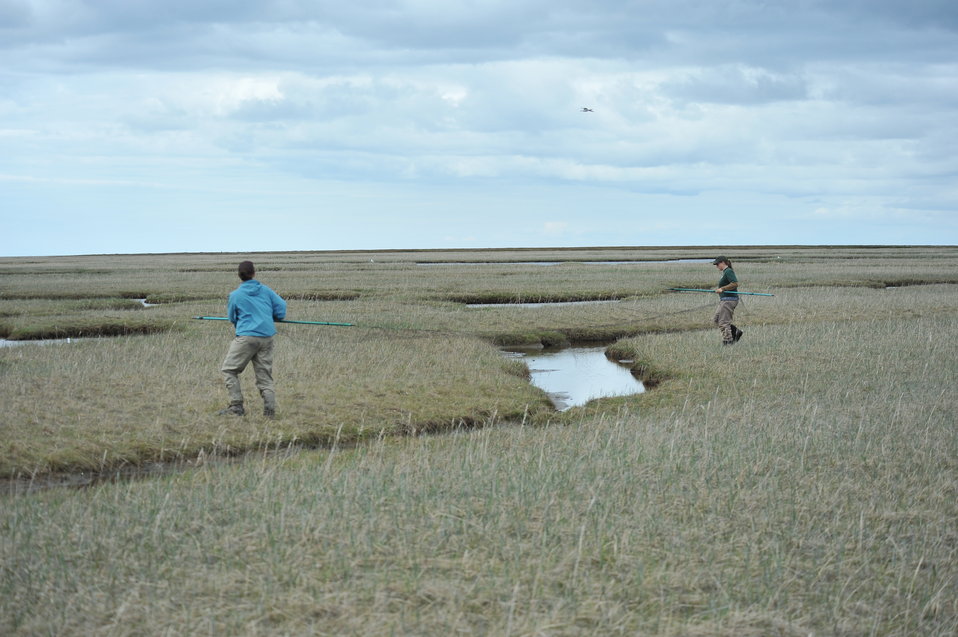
Mist-nets are another trapping method used to capture spectacled eiders (and other waterfowl species) on Kigigak Island. Mist nets are made from nylon and vary in mesh size and length. Mist nets typically have three to four panels that overlap to form 'pockets'. When a bird strikes the net, it drops into a pocket and become entangled. Mists nets are traditionally positioned vertically so that flying birds will hit the net and fall into the pockets. Mist-nets on Kigigak are being used to trap females that are sitting on their nest. Because of this, the the mist-nets have been modified so that there is only one large pocket. Poles are attached to either side of the mist net and The mist net is streched out horizontally between two people. The mist net is held taught while the researchers walk to where the female is sitting on her nest.

USFWS Yukon Delta NWR